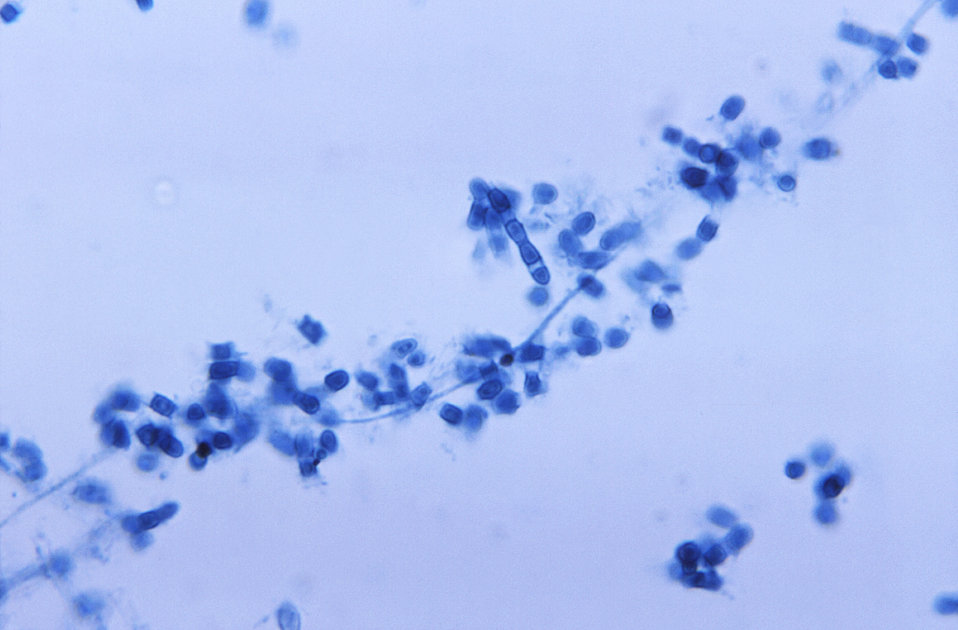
Magnified 500X, this photomicrograph revealed the presence of numerous thick-walled arthroconidia and arthrospores of Coccidioides immitis fungal organisms. The average arthrospore measures 3.0 x 4.5�m, and is barrel-shaped.